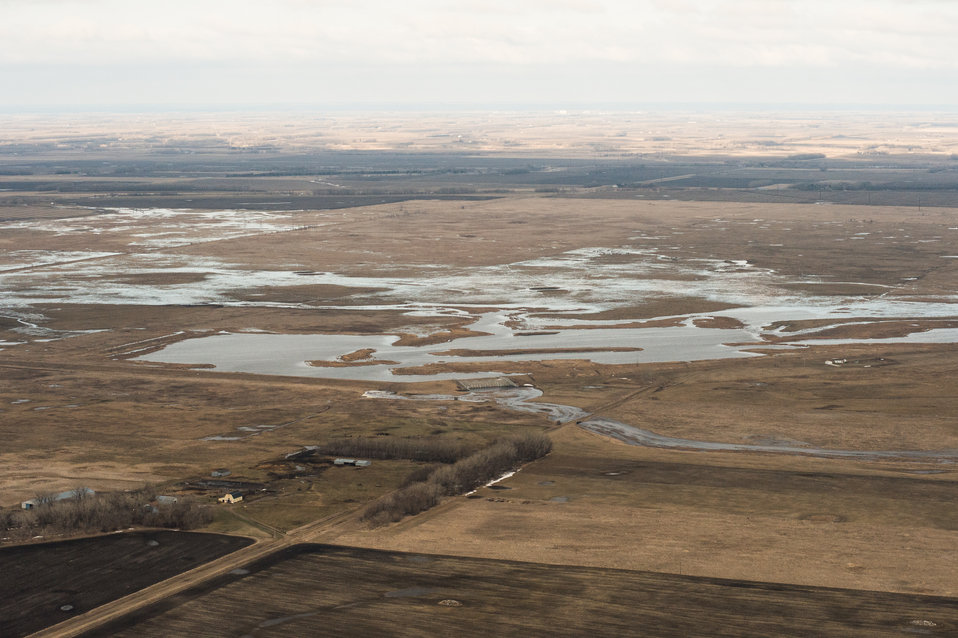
English Coulee Watershed Dam, a Public Law PL83-566 Small Watershed Program, in Grand Forks County, ND, on Tuesday, April 30, 2013.